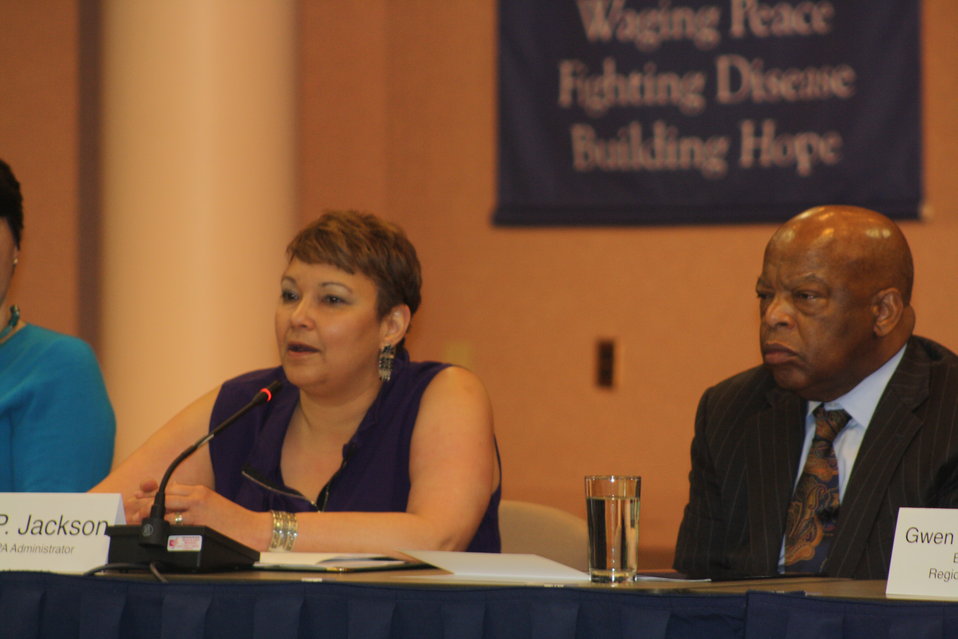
Faith-Based and Neighborhood Partnership launch at Atlanta's Carter Center